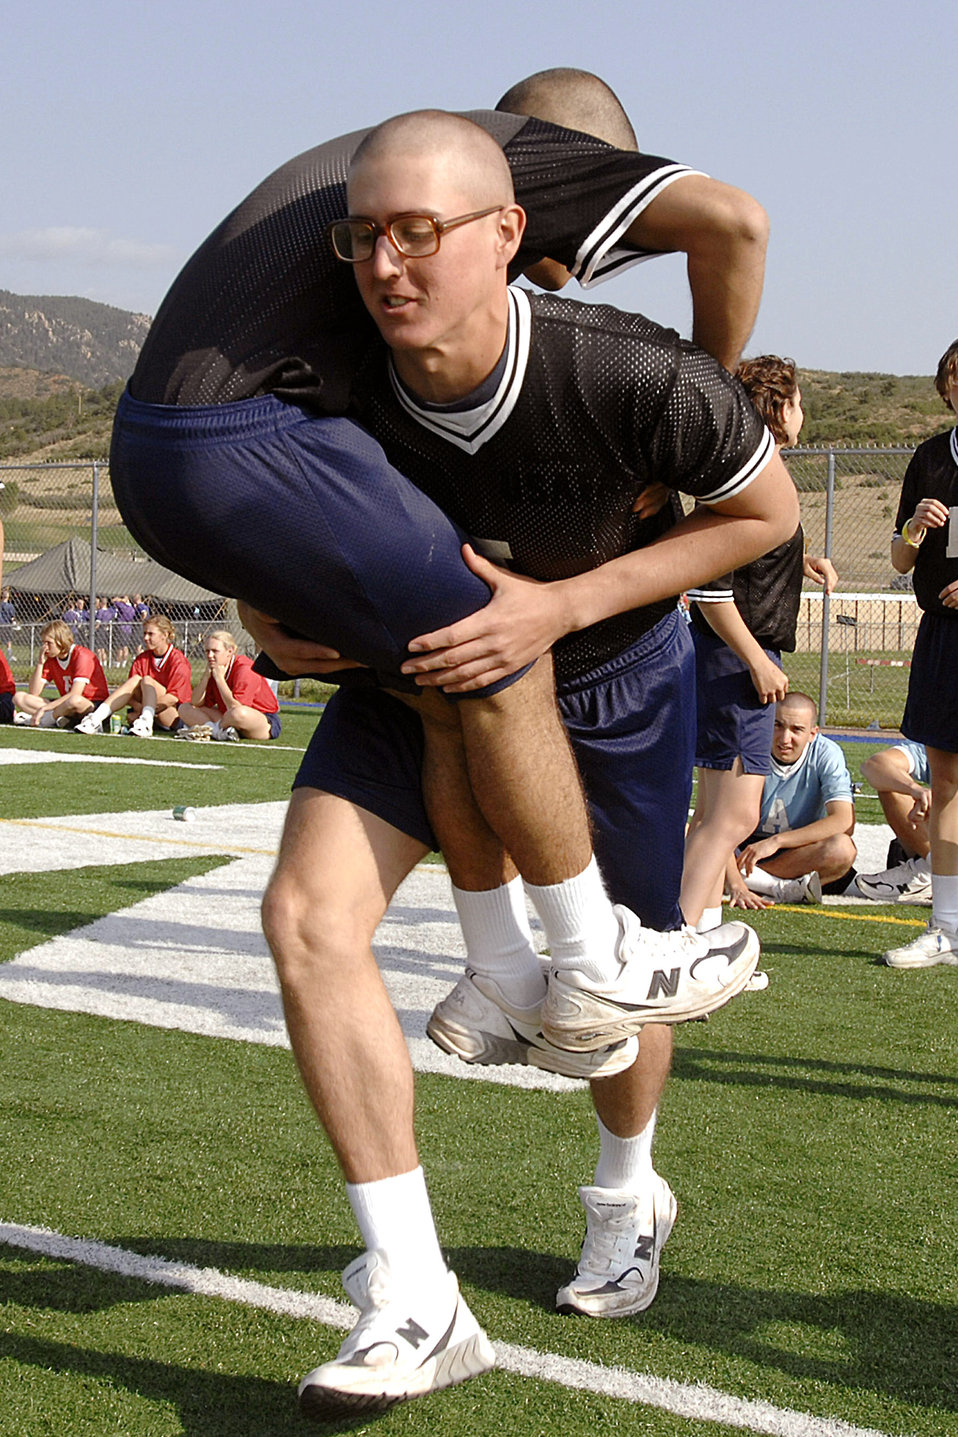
Academy basic cadets team up for Field Day

U.S. Air Force Academy basic cadet Kody O'Connell participates in the guerilla relay during Field Day July 12 at the Academy's athletic fields in Colorado Springs, Colo. Cadets compete in various athletic events to test their teamwork and athletic skills.